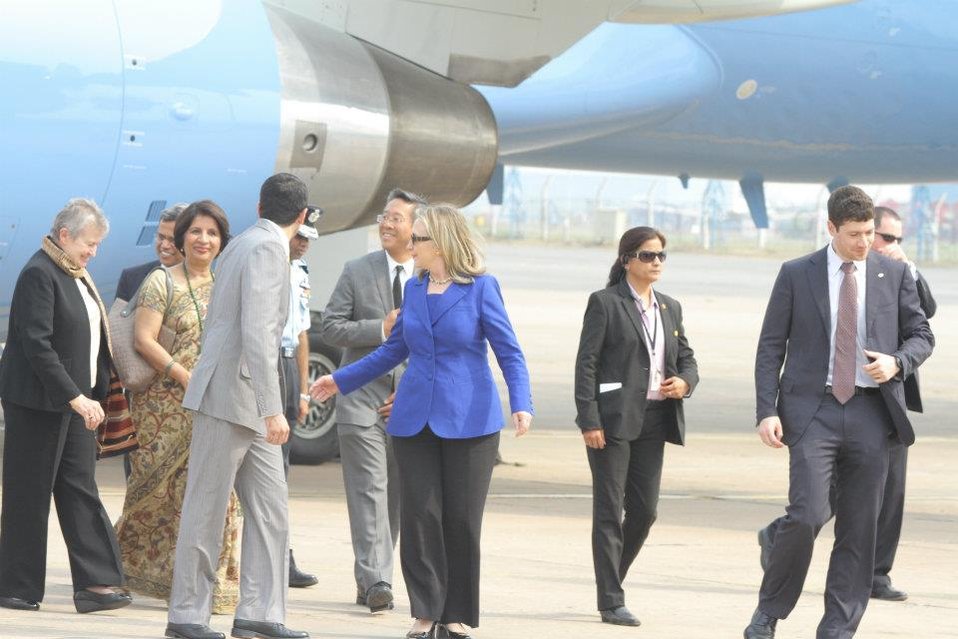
Secretary Clinton Is Welcomed By Ambassadors Powell and Rao

U.S. Secretary of State Hillary Rodham Clinton is welcomed by U.S. Ambassador India Nancy Powell and India Ambassador the United States Nirupama Rao upon her arrival to New Delhi, India, on May 7, 2012.